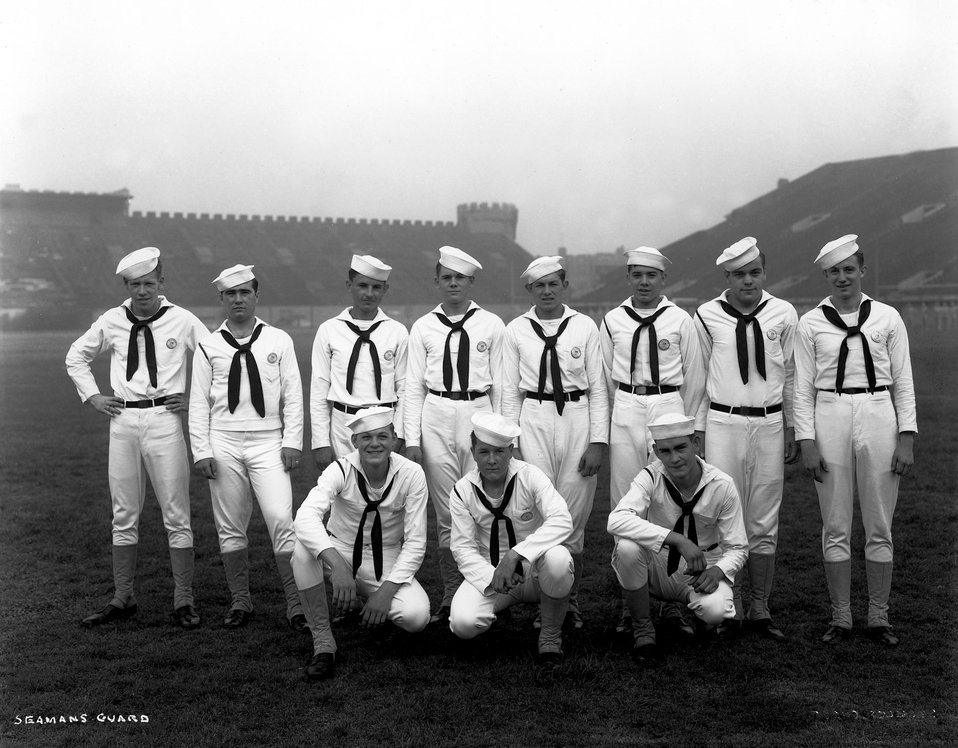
Seamans Guard, Stagg Field, University of Chicago.